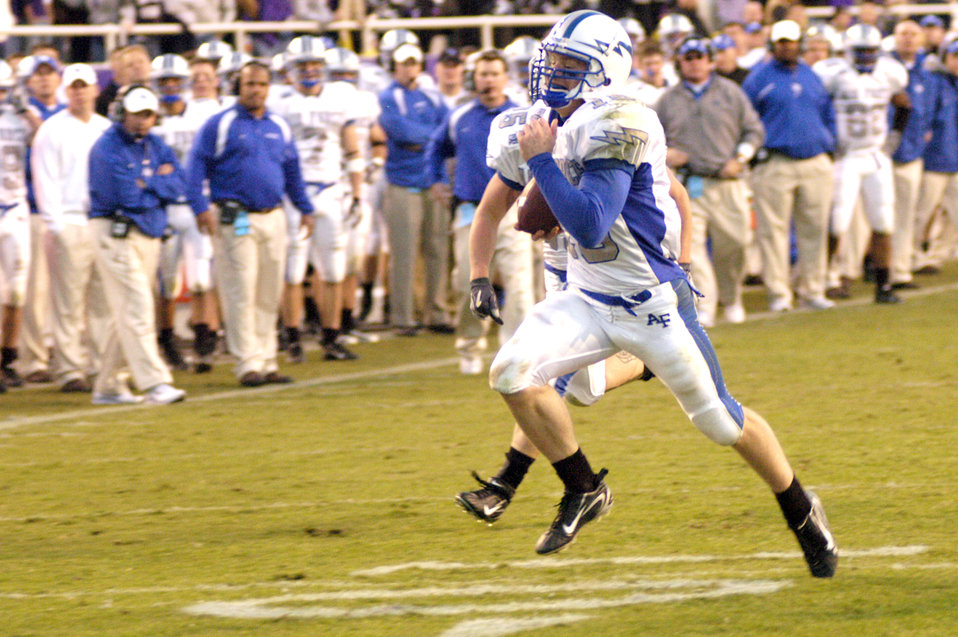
TCU grounds Air Force in season finale

Falcons backup quarterback Jim Ollis races 19 yards for the Air Force's final touchdown of the season late in the fourth quarter in a 38-14 loss to Texas Christian University Dec. 2 in Fort Worth, Texas.